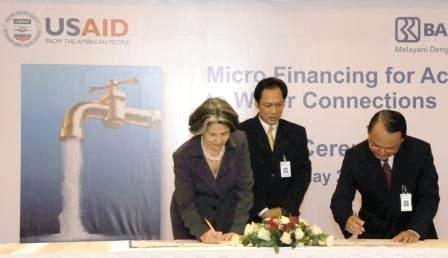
Under Secretary Otero Signs Memorandum of Understanding

Under Secretary for Democracy and Global Affairs Maria Otero signs a Memorandum of Understanding establishing partnership between USAID and Bank Rakyat Indonesia in Jakarta, Indonesia, May 20, 2010.